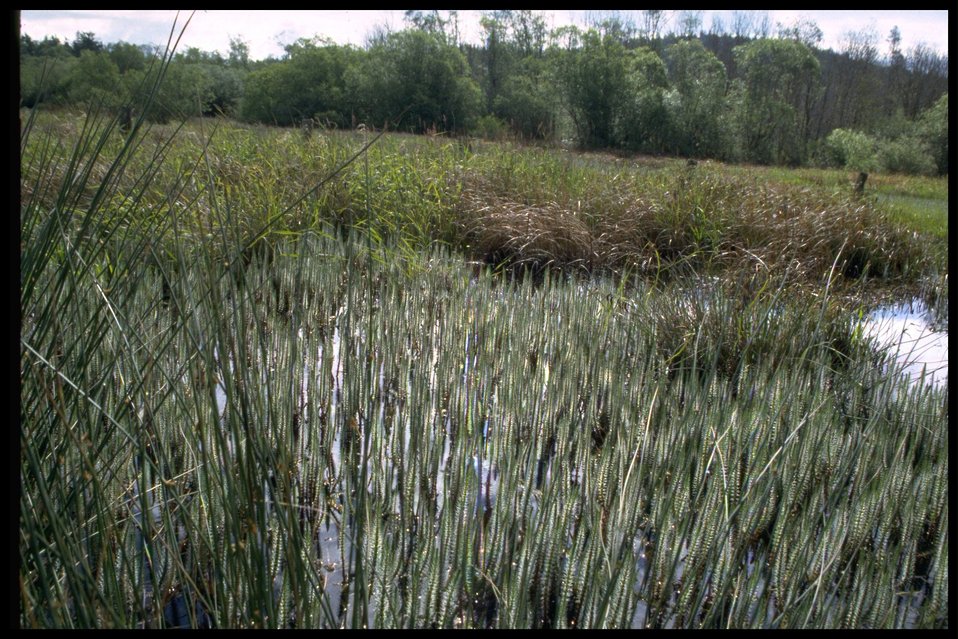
Chadwick Hill Marsh.